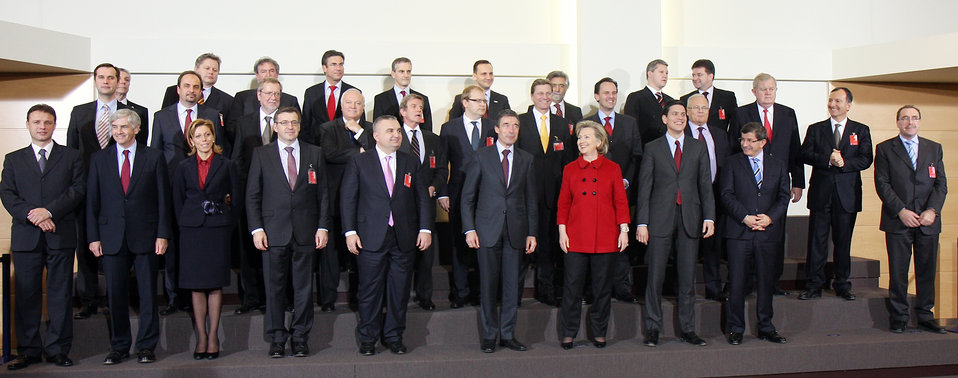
Official Portrait at NATO Headquarters

U.S. Secretary of State Hillary Rodham Clinton poses for an official portrait at the conference hall of NATO headquarters in Brussels, Belgium December 4, 2009.